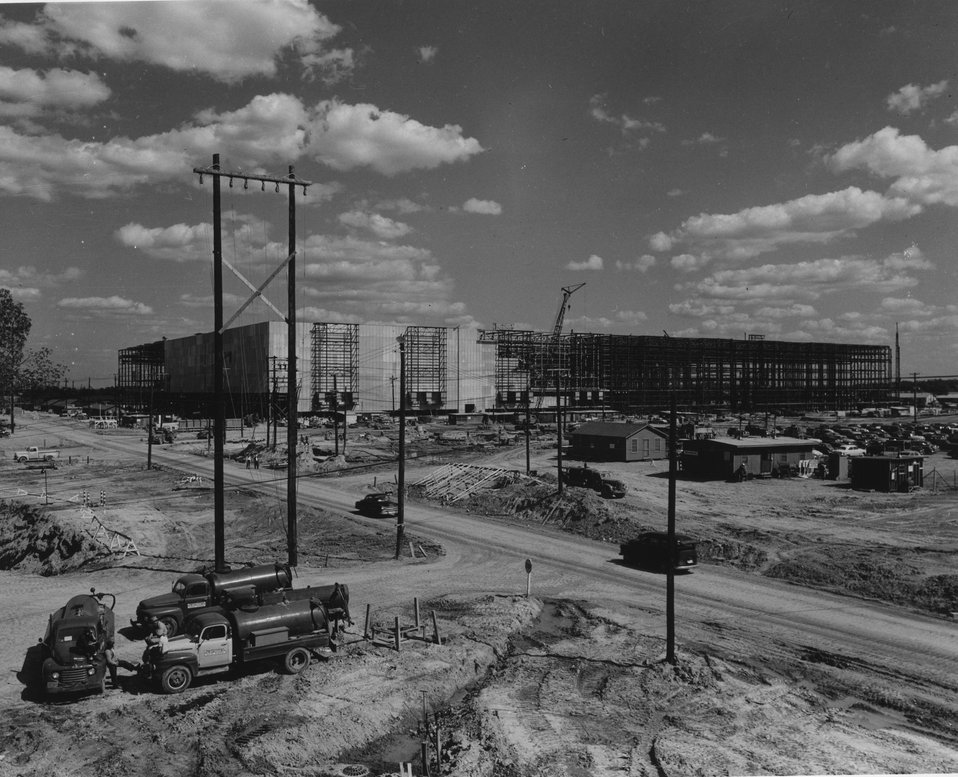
Paducah, Kentucky. c. 1952